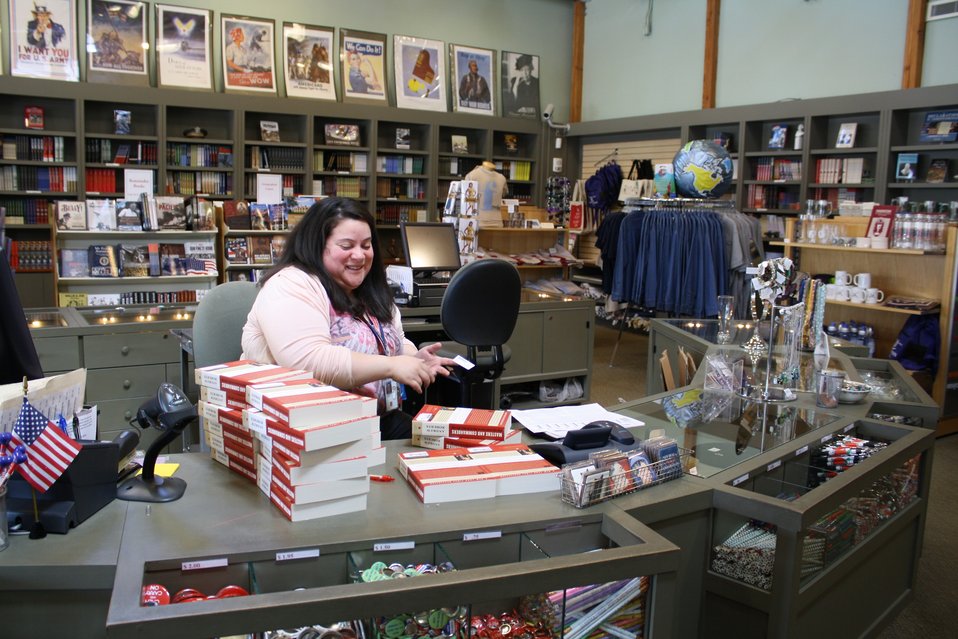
Yvette DeGracia labeling books in the FDR Library Museum Gift Shop.; Location: Franklin D. Roosevelt Presidential Library Store, Hyde Park, New York